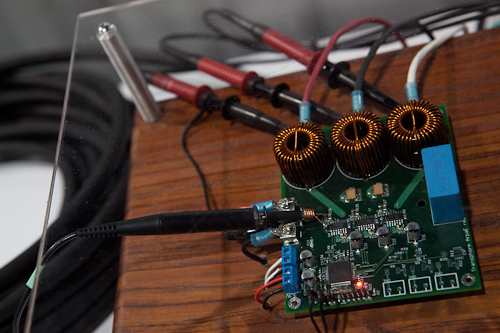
Transphorm(ing) Electric Motor Drives

California-based Transphorm is developing transistors with gallium nitride (GaN) semiconductors that could be used to make cost-effective, high-performance power converters for a variety of applications, including electric motor drives which transmit power to a motor.